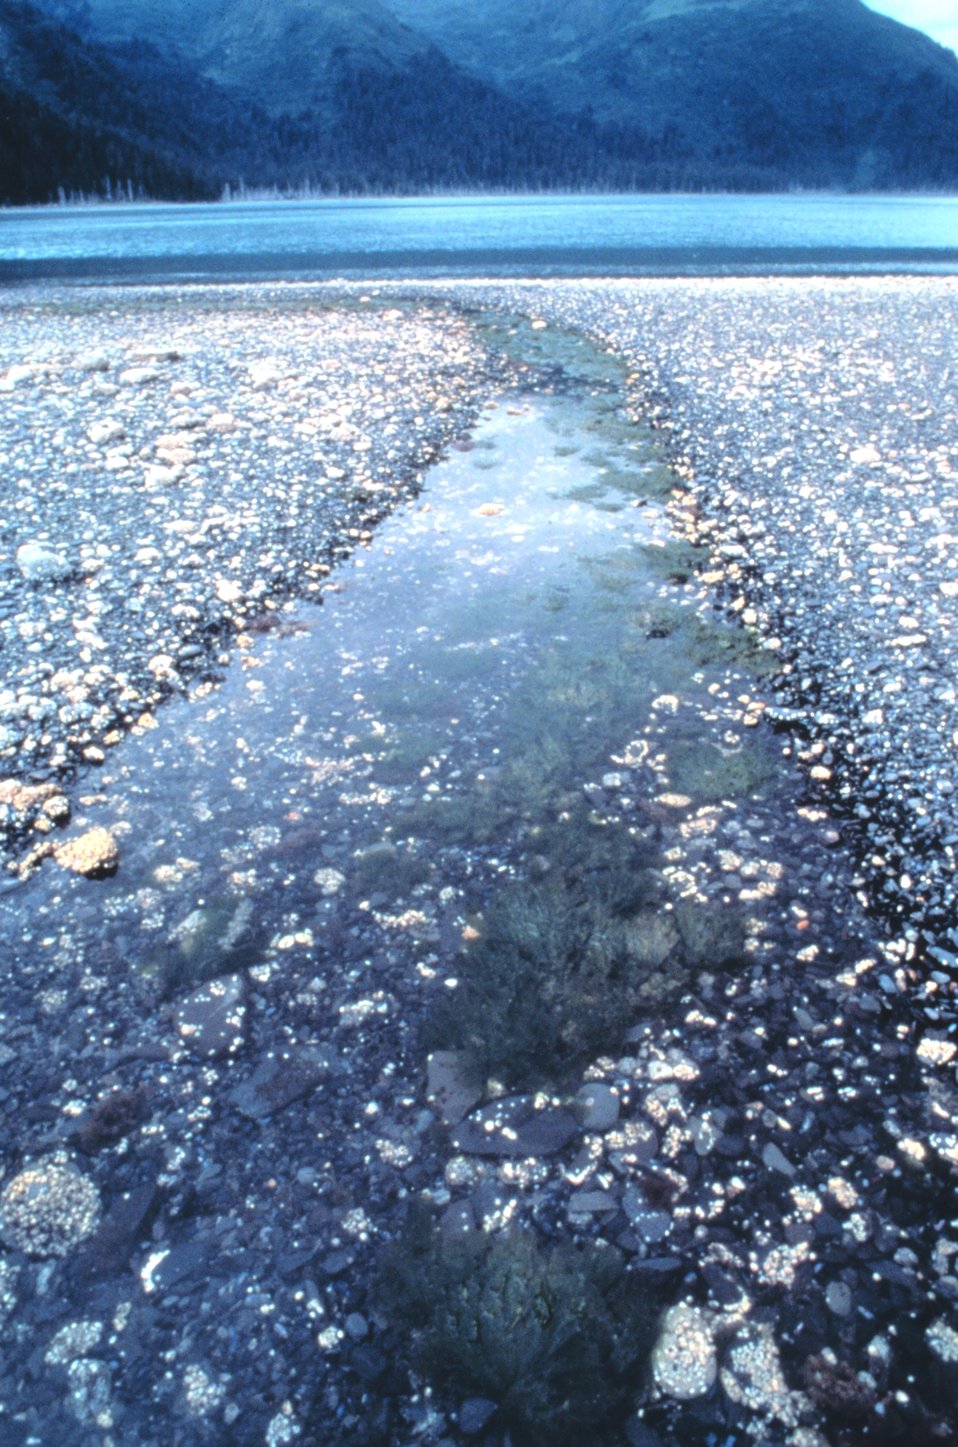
Intertidal area